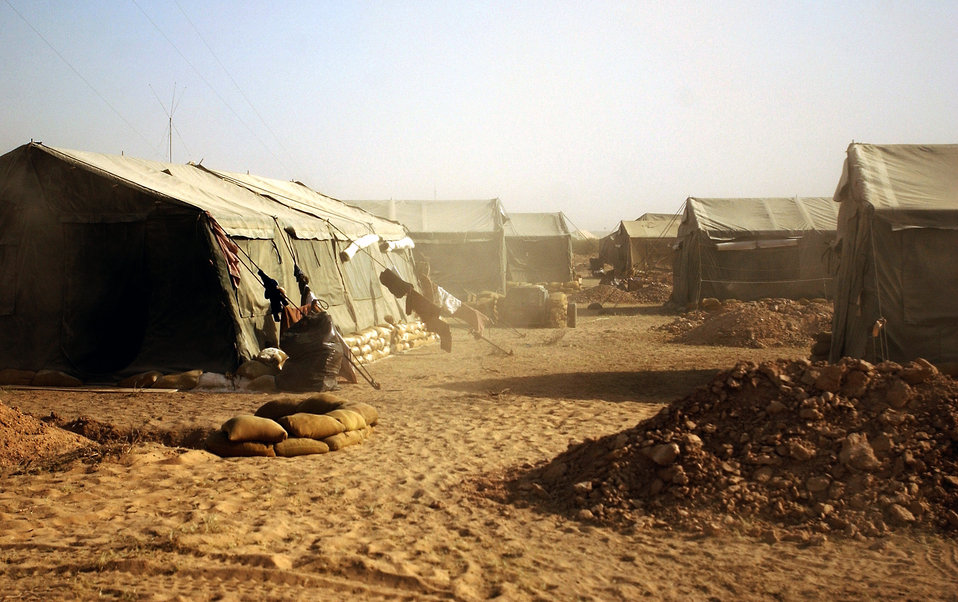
Camp Freddie

OPERATION IRAQI FREEDOM -- Expansion of Camp Freddie is underway as the Enemy Prisoners of War population grows by the hundreds daily during Operation Iraqi Freedom.